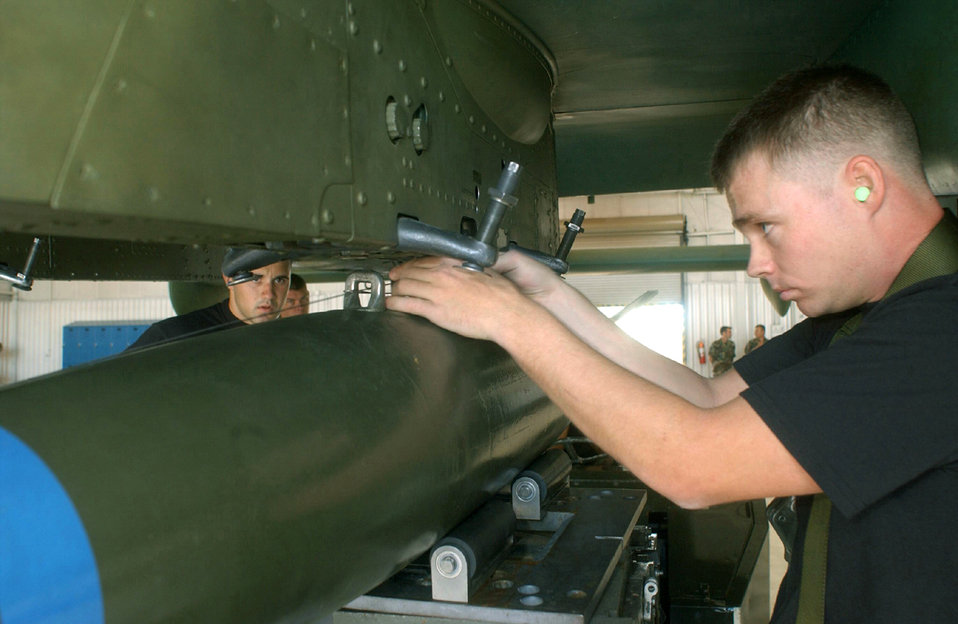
Load lovers

DAVIS-MONTHAN AIR FORCE BASE, Ariz. -- Staff Sgt. Kelly Evans (right) installs an arming loop under the watchful eye of Airman 1st Class Jesse Tyson. The loop enables an MK-82 bomb to set itself in motion for detonation. The Airmen were competing in a weapons load crew competition here, and are assigned to the 355th Aircraft Maintenance Squadron.